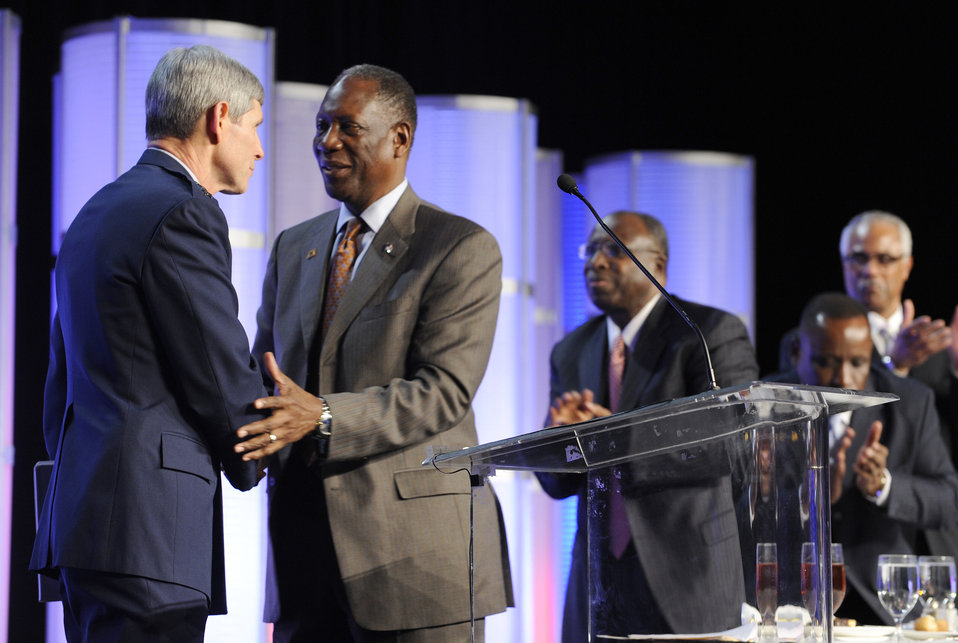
Black Engineer of the Year Awards

Retired Air Force Gen. Lester Lyles (second from left) thanks Air Force Chief of Staff Gen. Norton Schwartz (left) for giving the keynote address on Feb. 19, 2010, at the 5th Stars and Stripes tribute dinner, which is part of the 24th Annual Black Engineer of the Year Awards Conference being held Feb. 18 to 20 in Baltimore. General Lyles is a founding member of the Stars and Stripes National Chair and is serving as this year's dinner chairperson. This year's tribute dinner's theme is Saluting the Role of Our Military. The conference seeks to recognize a growing cadre of diverse professionals who are contributing to America's competitiveness and serving as role models to historically underrepresented groups in the sciences. General Schwartz emphasized that in order to maintain the world's best Air and Space force it is imperative to attract, recruit, train and retain the skilled scientists and engineers needed to create tomorrow's aerospace leaders.